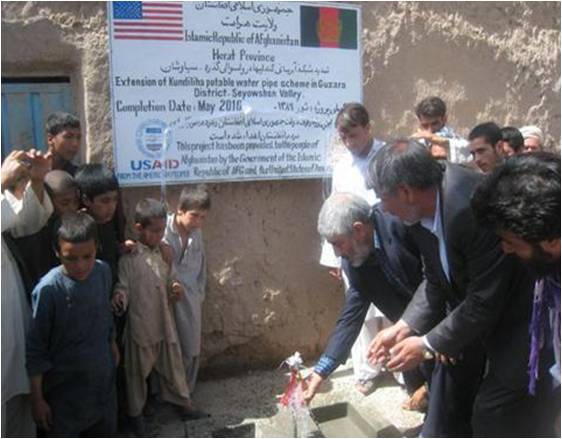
Pipes Provide Water for Life; School Provides Food for Thought